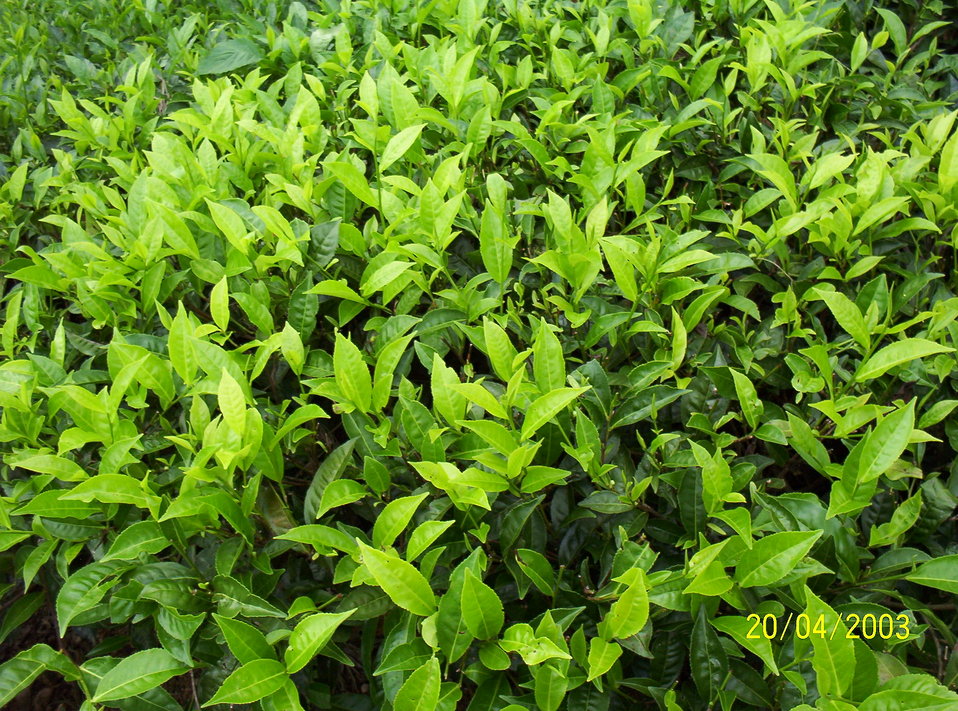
Tea plants